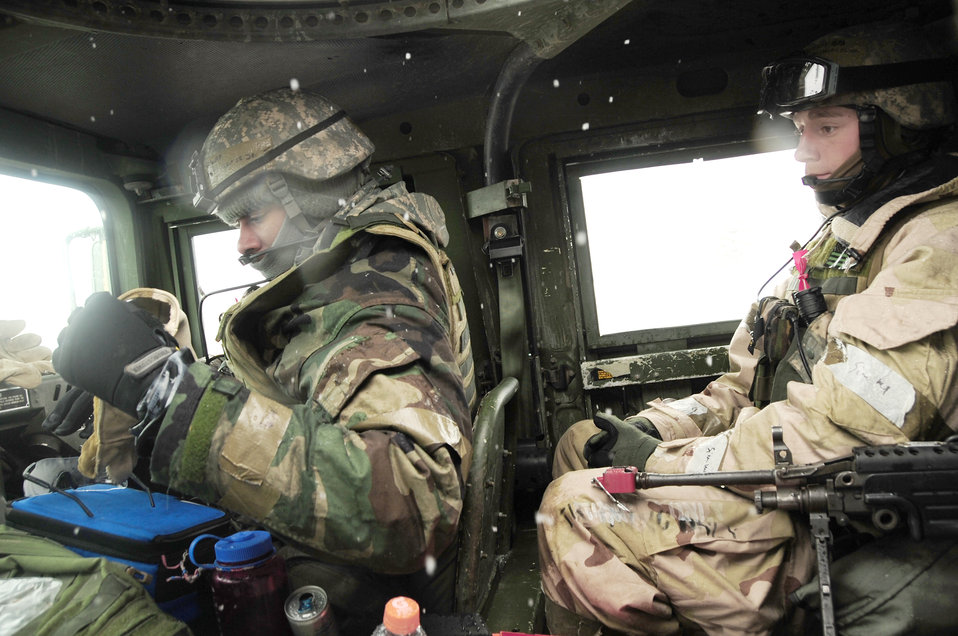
Ellsworth operational readiness exercise

Airman Clarence Jones and Senior Airman Bryan McClellan both warm up inside a Humvee during an operational readiness exercise May 12, 2010, at Ellsworth Air Force Base, S.D. Airmen Jones and McClellan are patrolmen with the 28th Security Forces Squadron.